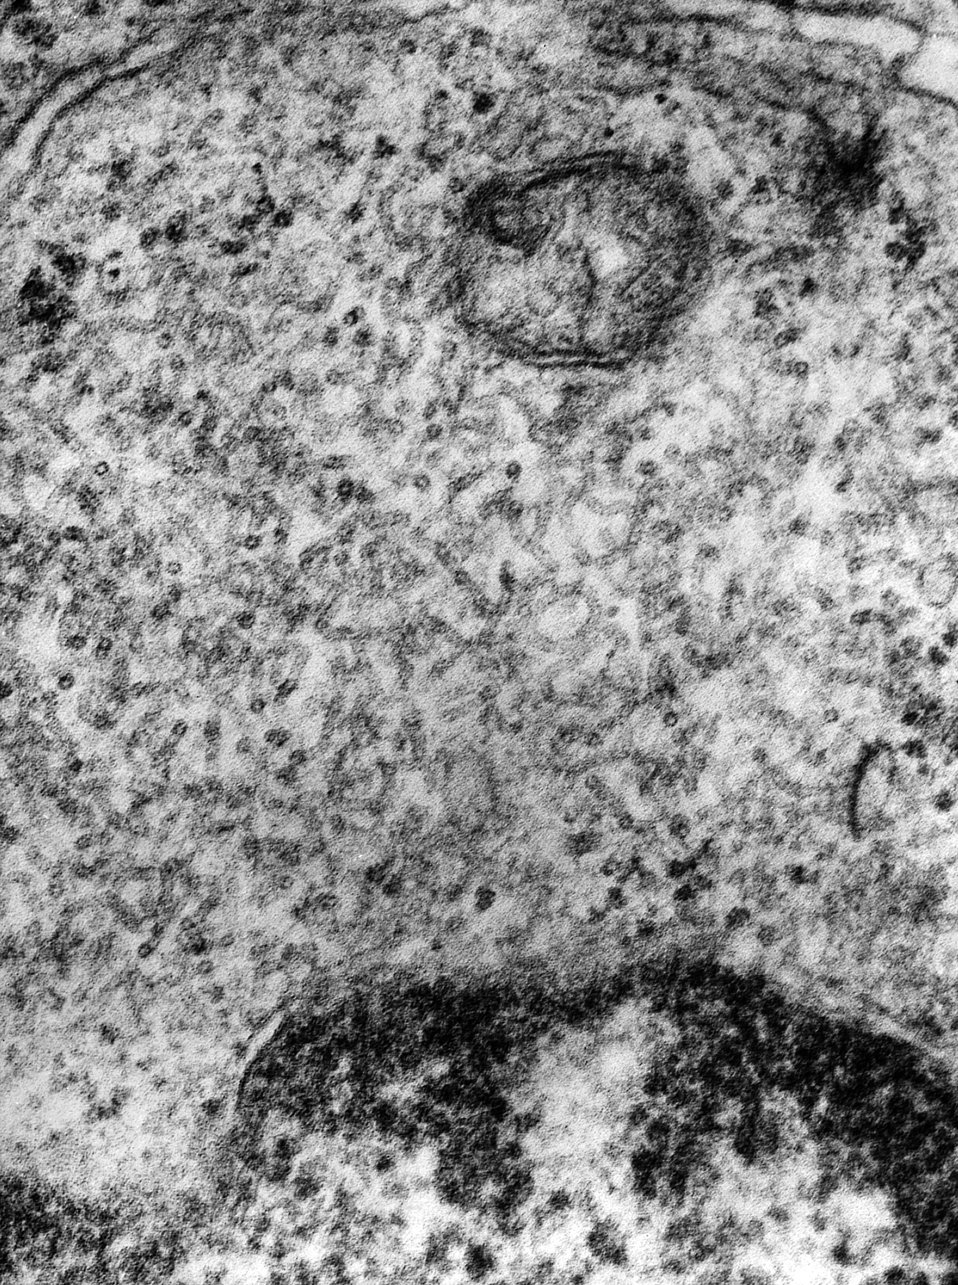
This transmission electron micrograph (TEM) revealed the presence of numerous paramyxovirus virions, which in this instance, were responsible for a case of the mumps. Paramyxoviruses are members of the family, Paramyxoviridae, and those that cause mumps in humans belong to the genus, Rubulavirus. The virus itself can present itself in a number of morphologic shapes, including spherical, and stand-like, or filamentous, ranging from 150nm to 200nm in diameter, and 1000nm to 10000nm in length. At its core lies a non-segmented, negative-sense RNA genome.